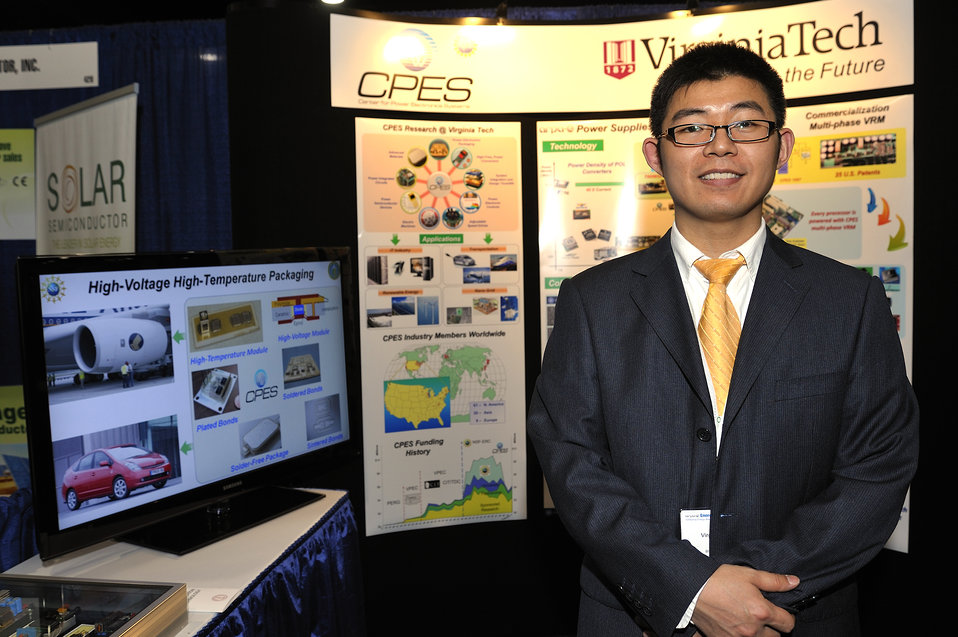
ARPA-E Energy Innovation Summit 2011, 40 of 83

Virgina Tech Both at the Summit's Technology Showcase.